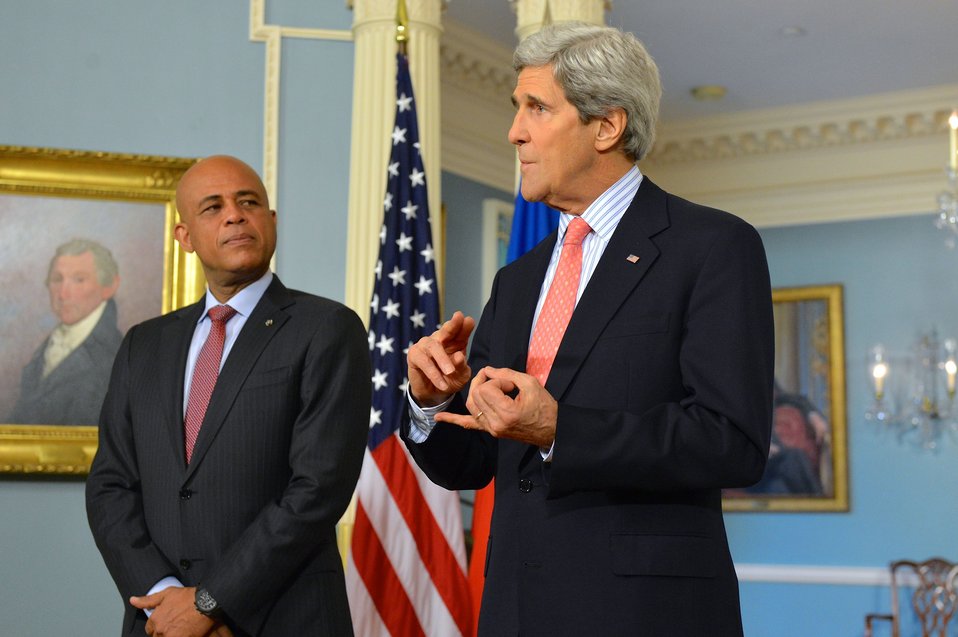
Secretary Kerry and Haitian President Martelly Address Reporters

U.S. Secretary of State John Kerry and Haitian President Michel Martelly address reporters before their bilateral meeting at the U.S. Department of State in Washington, D.C., on February 5, 2014.